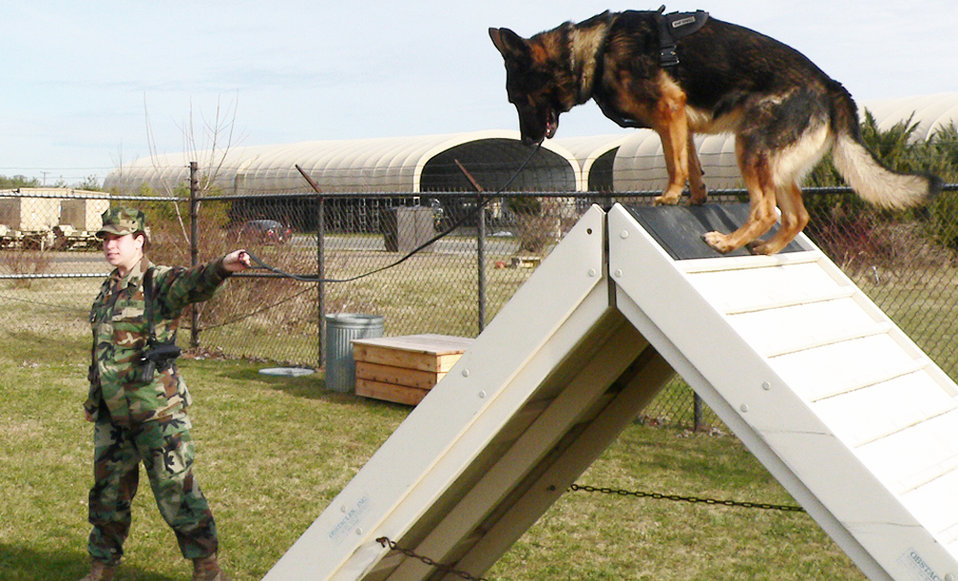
A dog's life at McGuire

Navy dog handler Petty Officer 2nd Class Ashley Bidon walks her military working dog across an obstacle course at the base kennel Jan. 5, 2010, at Joint Base McGuire-Dix-Lakehurst, N.J. The obstacles are used to aid obedience refresher training and to keep the animals in top physical condition.